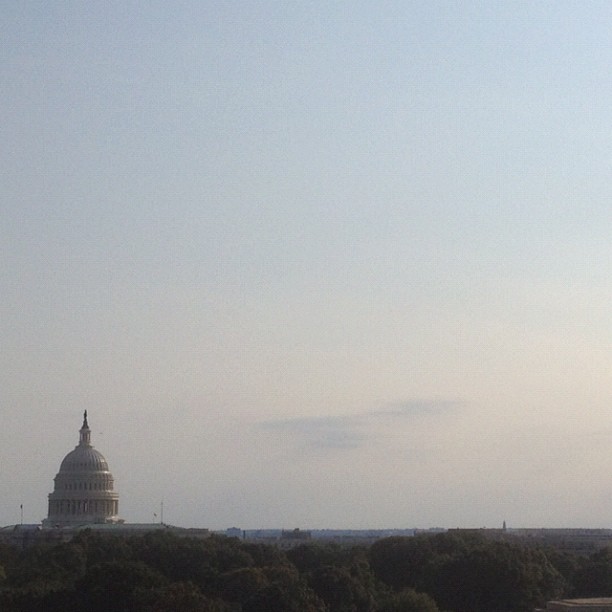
Nice early fall sunset on Capitol. #dc